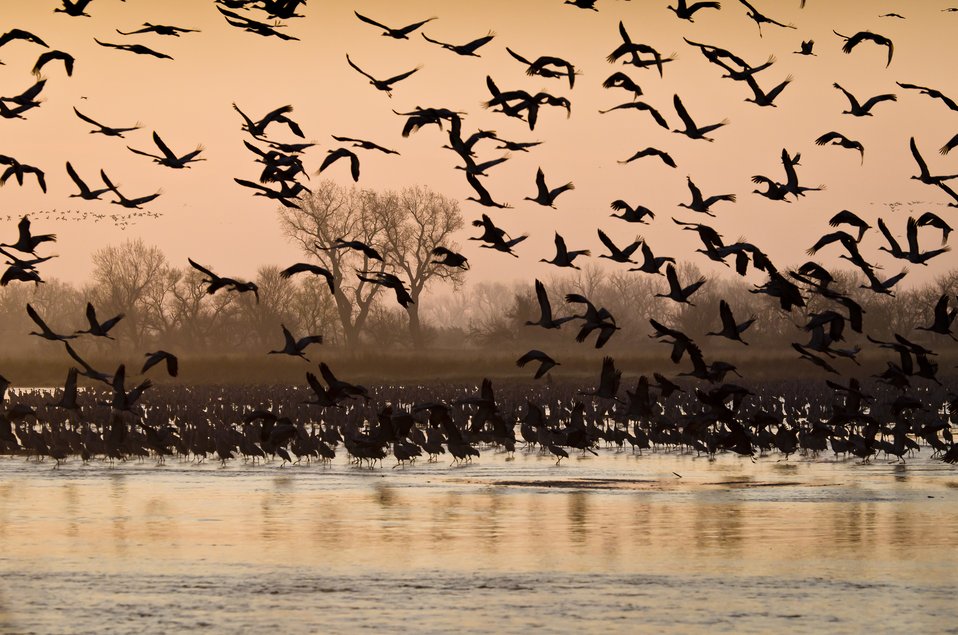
11th Place - March Morning on the Platte River

Every year hundreds of thousands of sandhill cranes congregate on the Platte River during their Spring migration, forming large flocks that use the sandbars of the Platte River as a nightime refuge before dispersing to local fields to feed during the day.

Credit: Larry Crist / USFWS

Photo Contest Entry #152